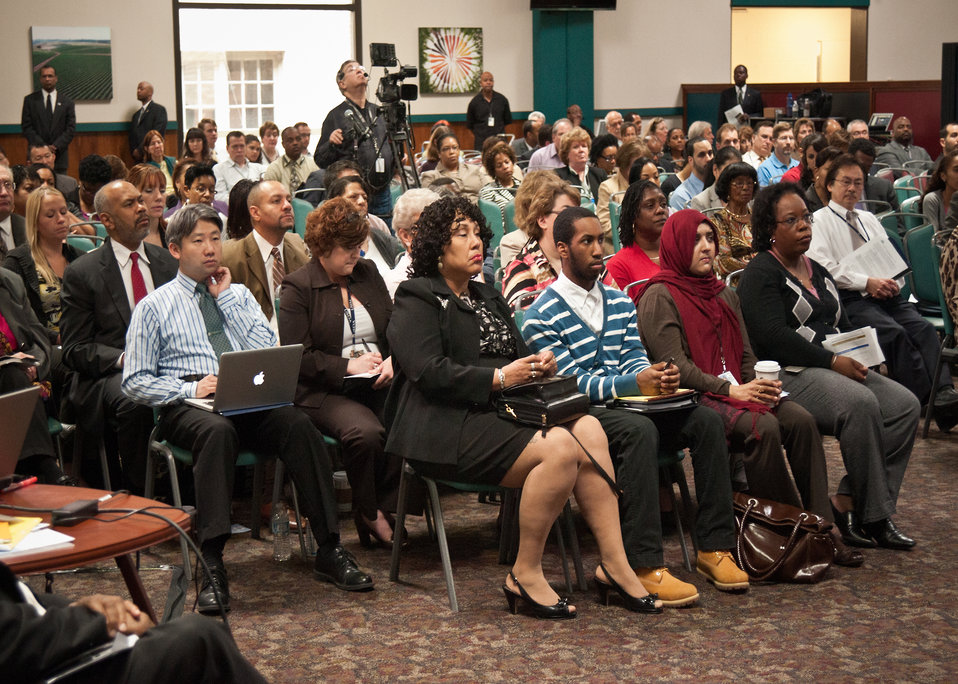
Agriculture Secretary Tom Vilsack offered U.S. Department of Agriculture (USDA) employees the opportunity to ask questions about the Blueprint for Stronger Service Initiative and hear directly from the Secretary Vilsack during the Ask The Secretary event held in the South Building Cafeteria, in Washington, D.C., on Wednesday, March 21, 2012, The Blueprint for Stronger Service Initiative aims to build a modern and efficient service organization that is closely timed with technological innovations - and better suited to respond to 21st century agricultural challenges.